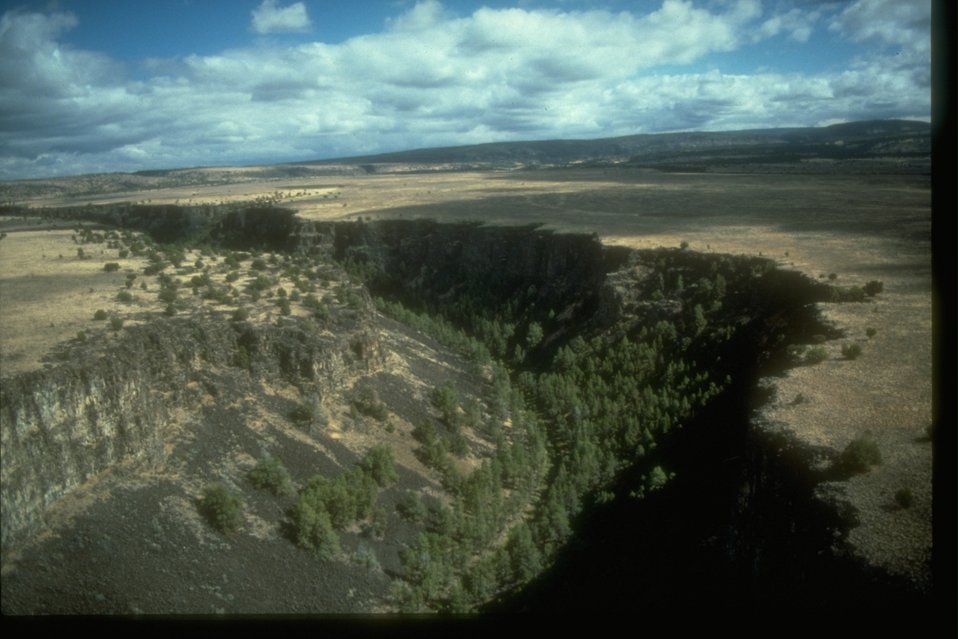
North Fork of the Owyhee River Canyon.